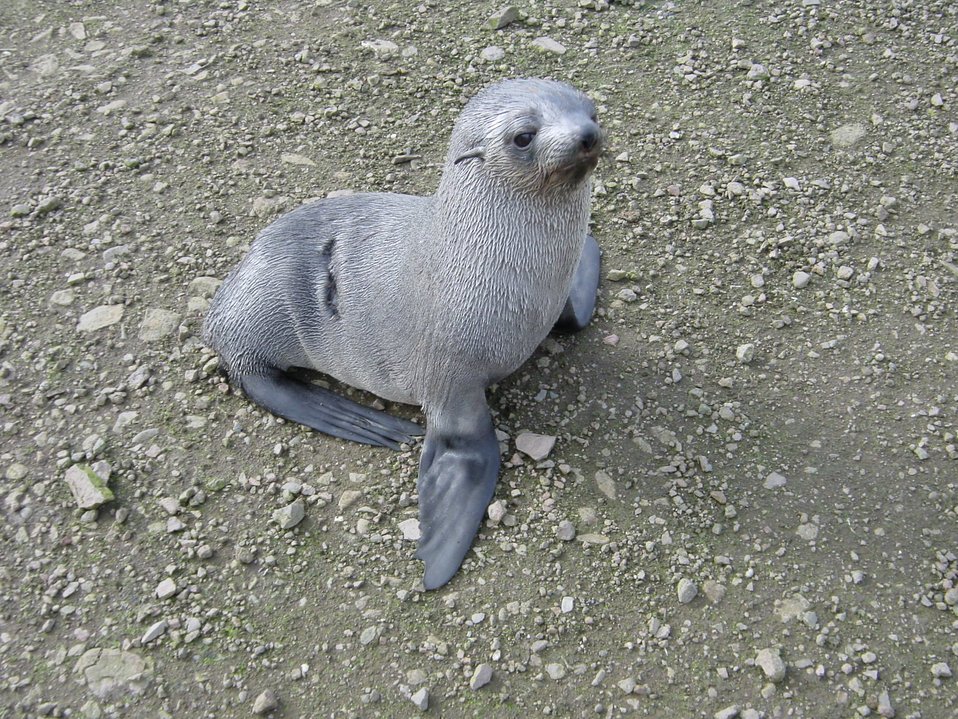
An Antarctic fur seal pup